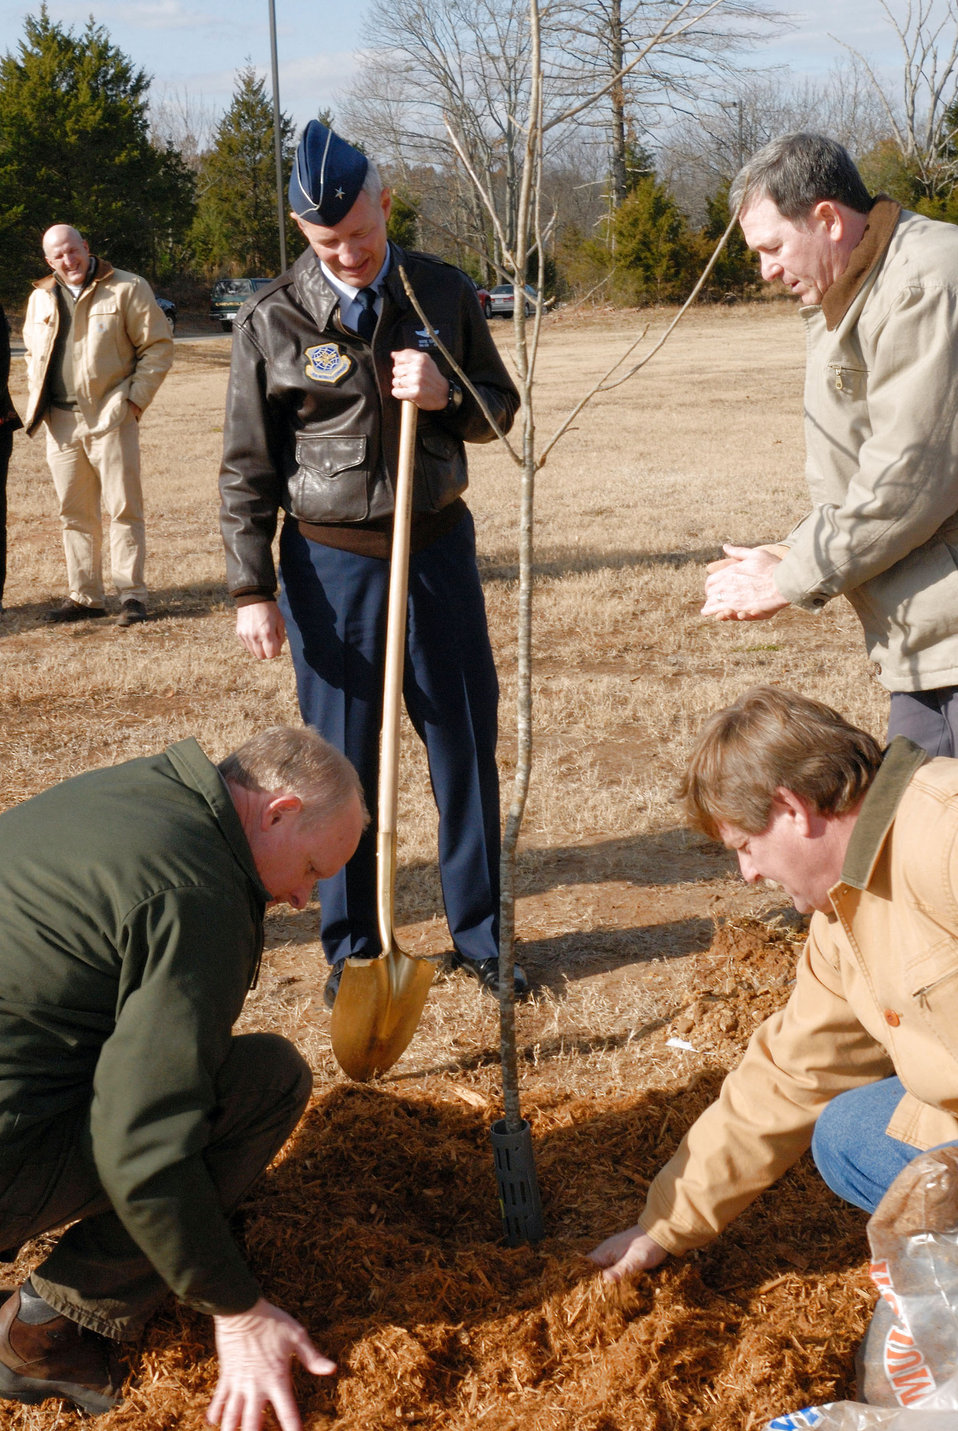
Little Rock officials celebrate Arbor Day

Brig. Gen. Rowayne A. Schatz Jr., Larry Nance, Pete Rausch and James Popham plant a tree for the 15th Annual Arbor Day ceremony Dec. 1 at the base child development center at Little Rock Air Force Base, Ark. General Schatz is the 19th Airlift Wing commander, Mr. Nance is the Arkansas deputy state forester, Mr. Rausch is from Tree Health Care, and Mr. Popham is the 19th Civil Engineering Squadron natural resources manager.